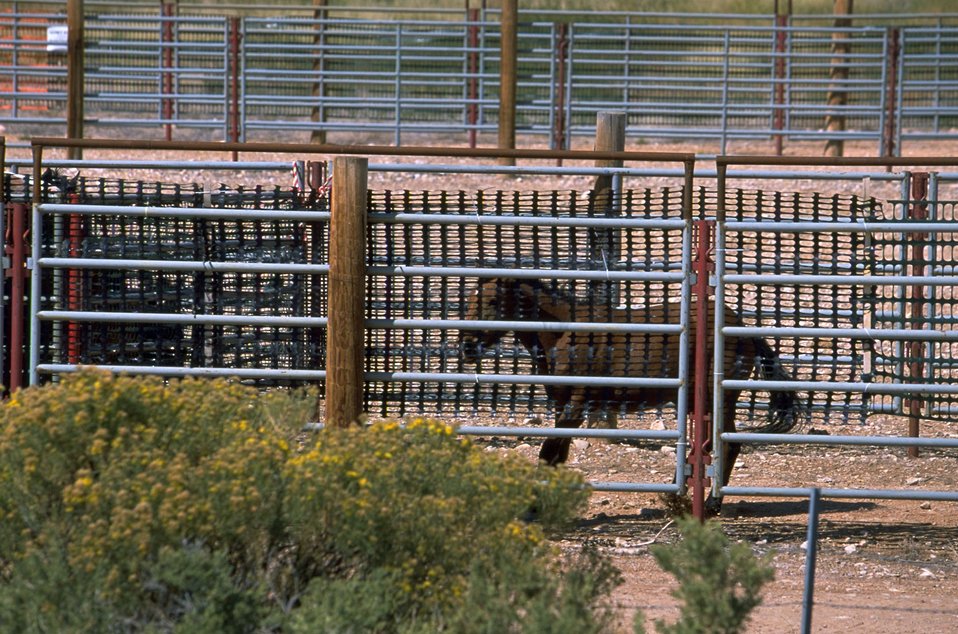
A wild horse in a holding corral at Britton Spring